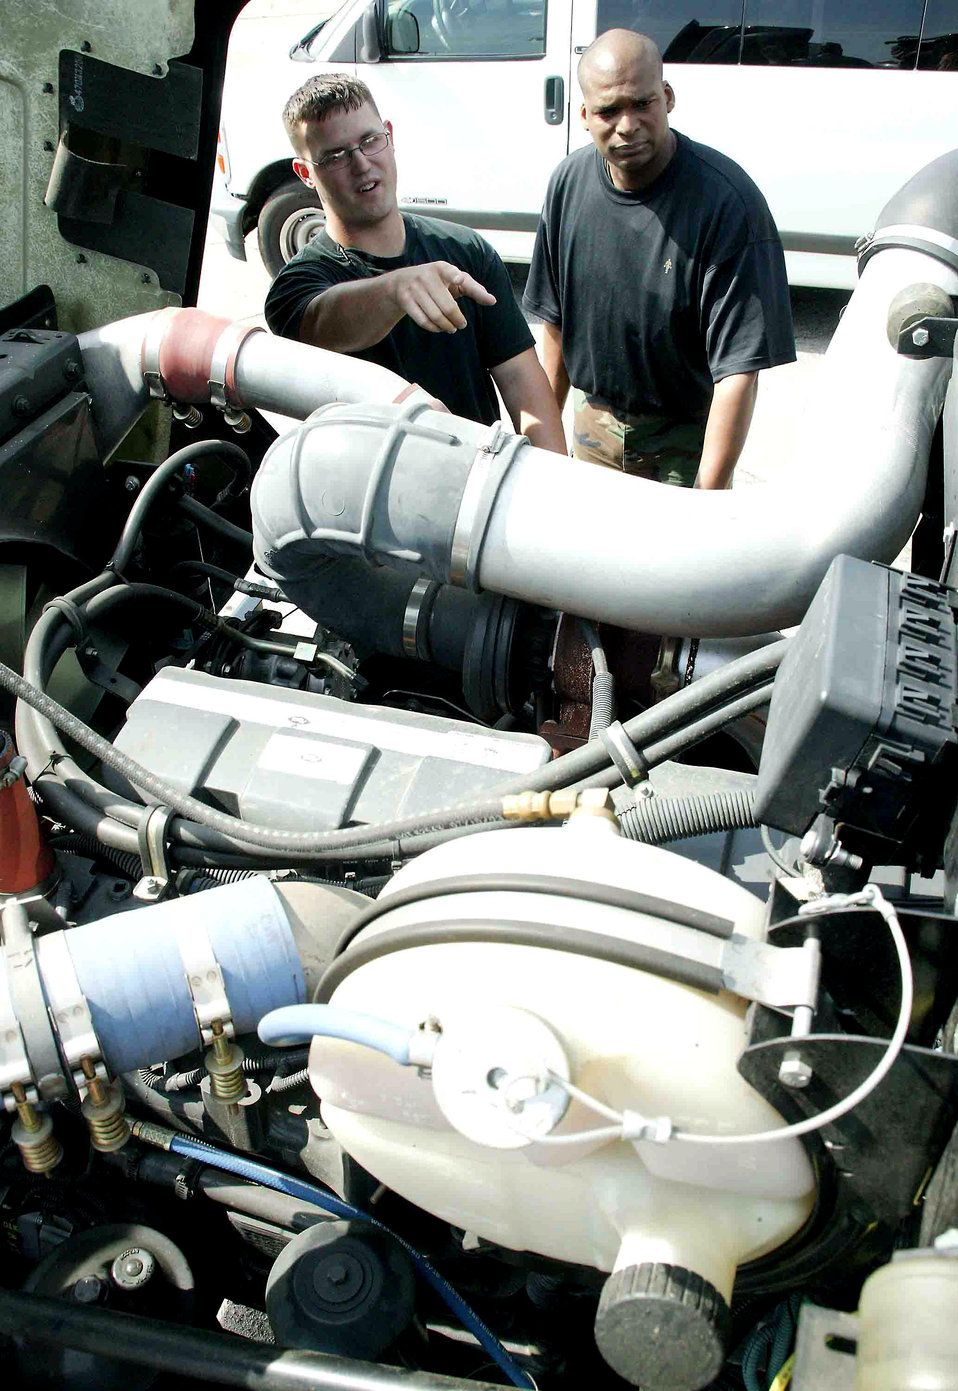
Shaw to begin one-year hybrid refueler test

Staff Sgt. Stephen Zuelke (left) and Tech. Sgt. Spellmon Quinn discuss the location of the fuse box on an R-11 hybrid refueling vehicle April 25 at Shaw Air Force Base, S.C. The 72,000-pound, environmentally-friendly hybrid, the only one of its kind in the Air Force, is undergoing a one-year test at to see how much money it is saves on fuel, maintenance and other cost measurements. Sergeants Zuelke and Quinn are vehicle technicians assigned to the 20th Logistics Readiness Squadron.